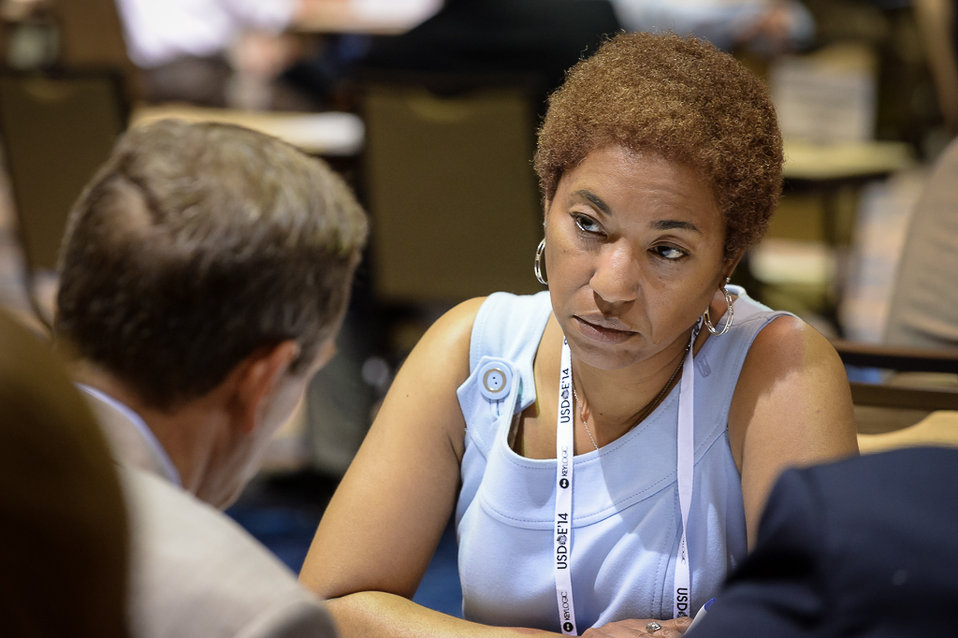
OSDBU Conf 9